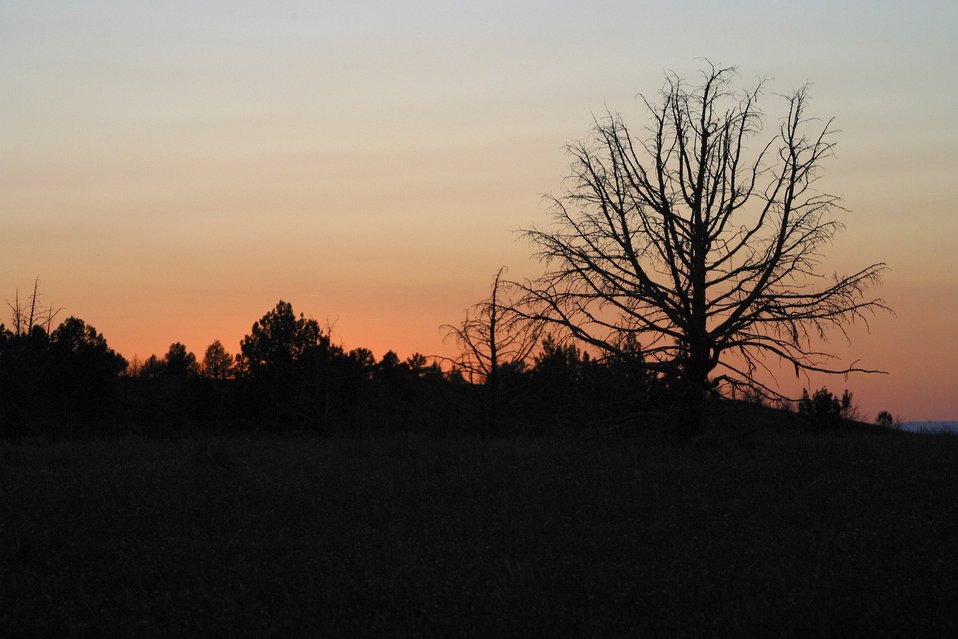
Sun set in the Kiger Wild Horse Viewing Area.